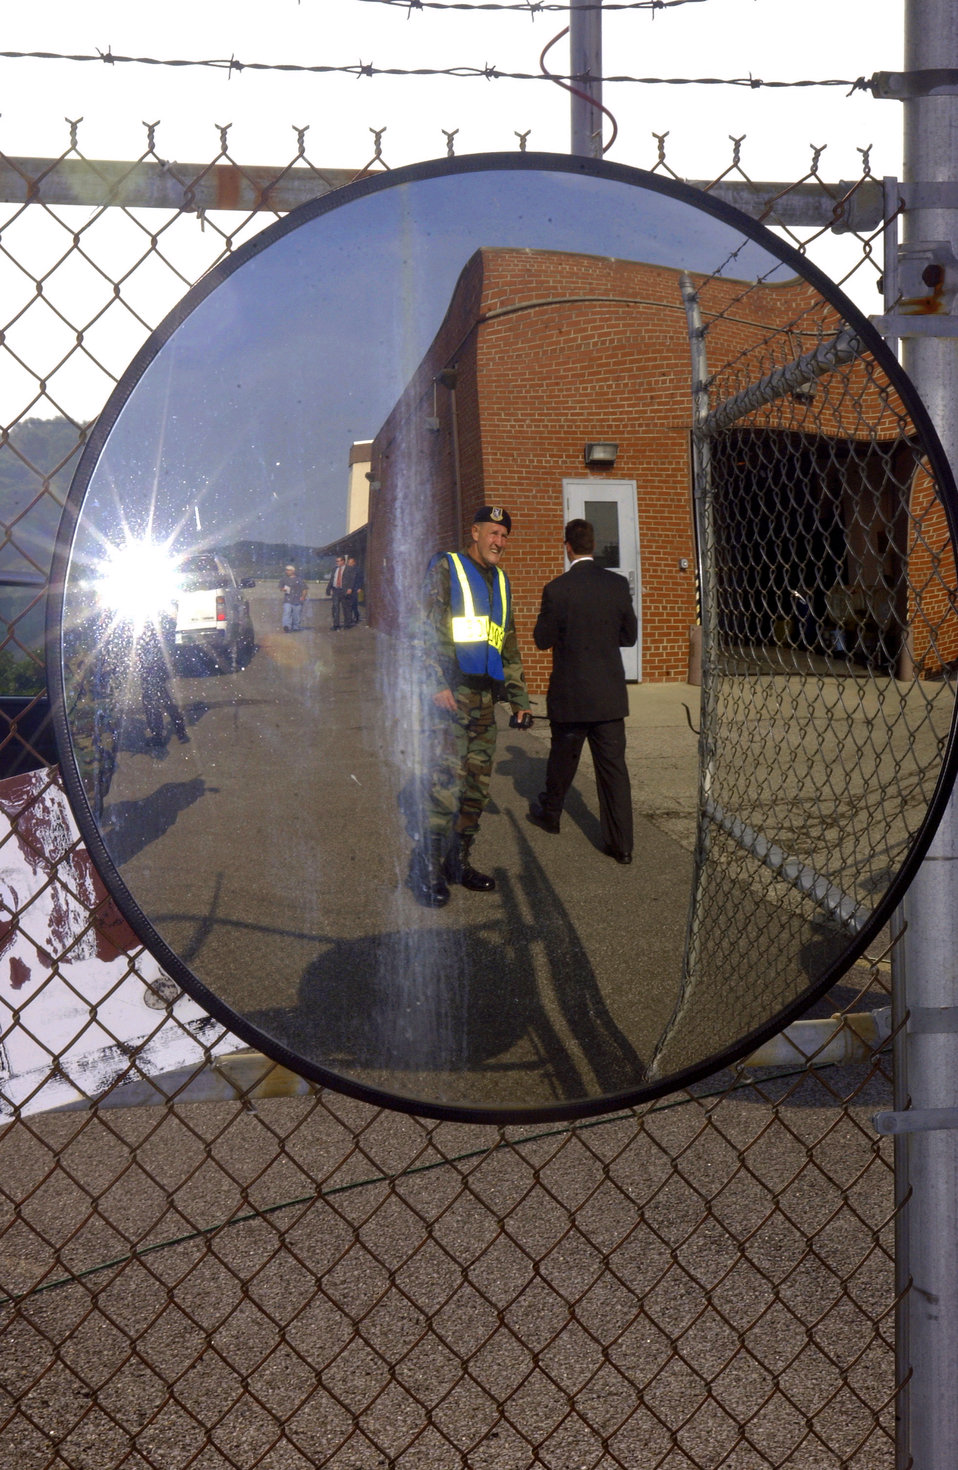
A reflection of security

CHARLESTON, W.V. -- Tech. Sgt. Gary Blankenship stands watch during a presidential visit here July 4. Sergeant Blankenship is a security forces member with the West Virginia Air National Guard's 130th Airlift Wing.